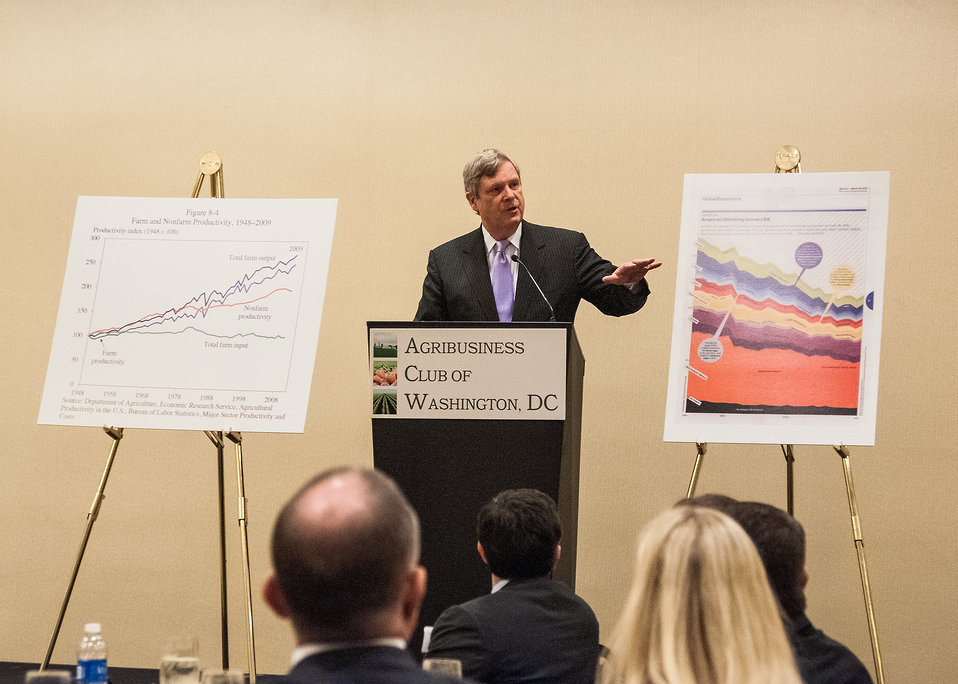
Agriculture Secretary Tom Vilsack spoke to the Agribusiness Club of Washington, D.C. on National Agriculture Day, Tuesday, Mar. 19, 2013. Secretary Vilsack discussed his four cornerstone priorities for the new rural economy – with special focus on building new markets for production agriculture and local/regional marketing of food. The graph to the right of Secretary Vilsack represents the progress in agriculture production form 1948-2009 and the graph to the left represents the progress in the cost of food in the same period.